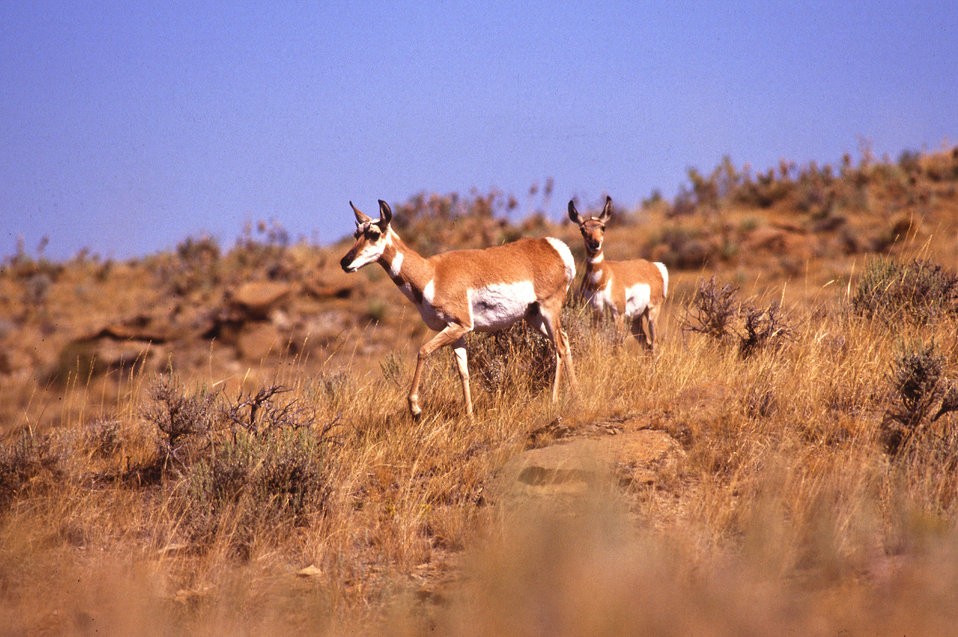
Pronghorn antelope and other wildlife are abundant on the Fort Keogh rangeland.